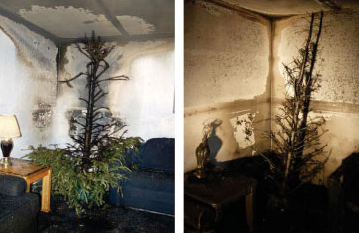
Fire Test; Christmas trees

These are the remains of two dry Christmas trees NIST researchers burned in an experiment. The room shown on the left had a sprinkler system; the one on the right, which is destroyed, did not have a sprinkler system.